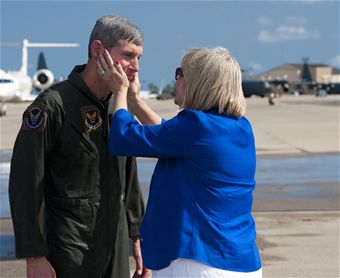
CSAF's

Air Force Chief of Staff Gen. Norton Schwartz is embraced by his wife Susie, following his last flight as an active duty officer on an MC-130E Combat Talon I, at Hurlburt Field, Fla., July 12, 2012. The MC-130E crew conducted a local training sortie during the mission. It also served as Schwartz's